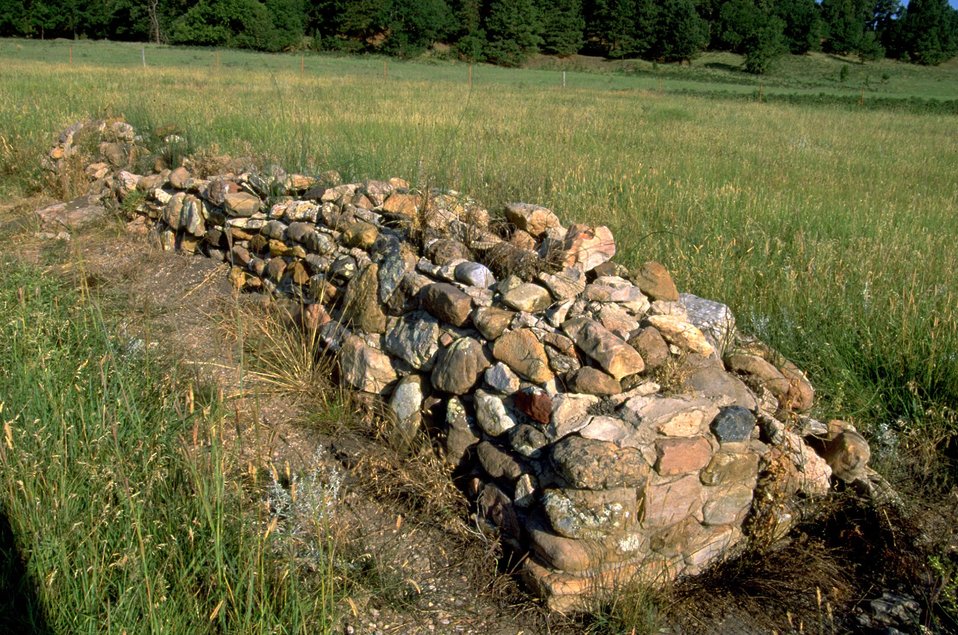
Cavalry Jumps at south end of Fort Meade